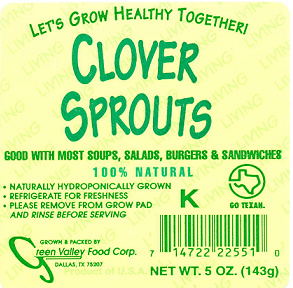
CRECALLED - Sprouts

December 31, 2011 - RECALL Green Valley Food Corp. is Expanding Its Recall to Include Additional Products Because of a Possible Health Risk.